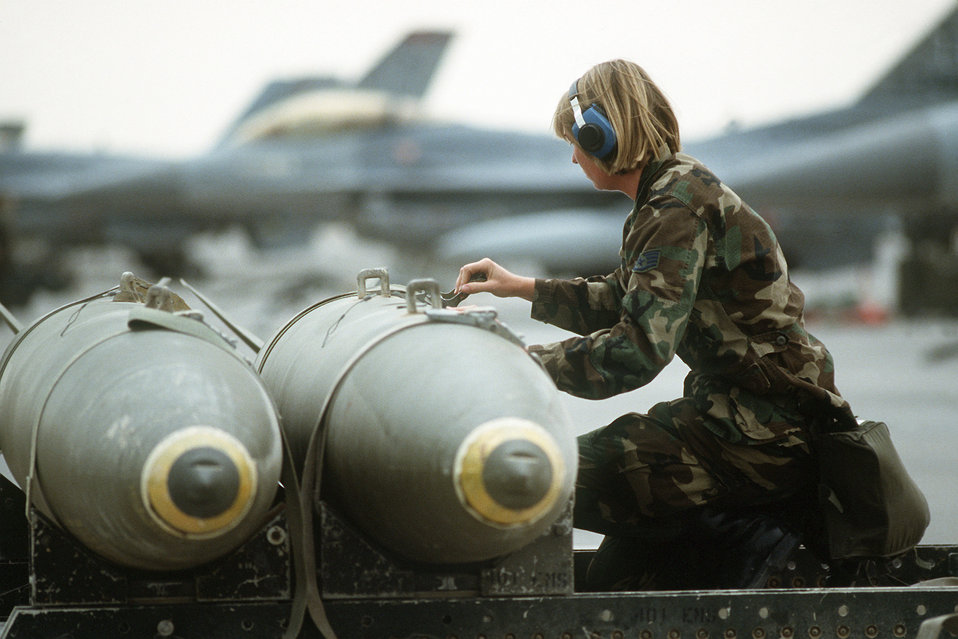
Staff Sgt. Karen Fulce checks bombs of a F-16

1990's -- Staff Sgt. Karen Fulce, 401st Aircraft Generation Squadron, checks over Mark 84 2,000-pound bombs as the ordnance is readied for loading aboard 401st Tactical Fighter Wing F-16 Fighting Falcon aircraft. The aircraft will be conducting the first daylight strike against Iraqi targets during Operation Desert Storm.